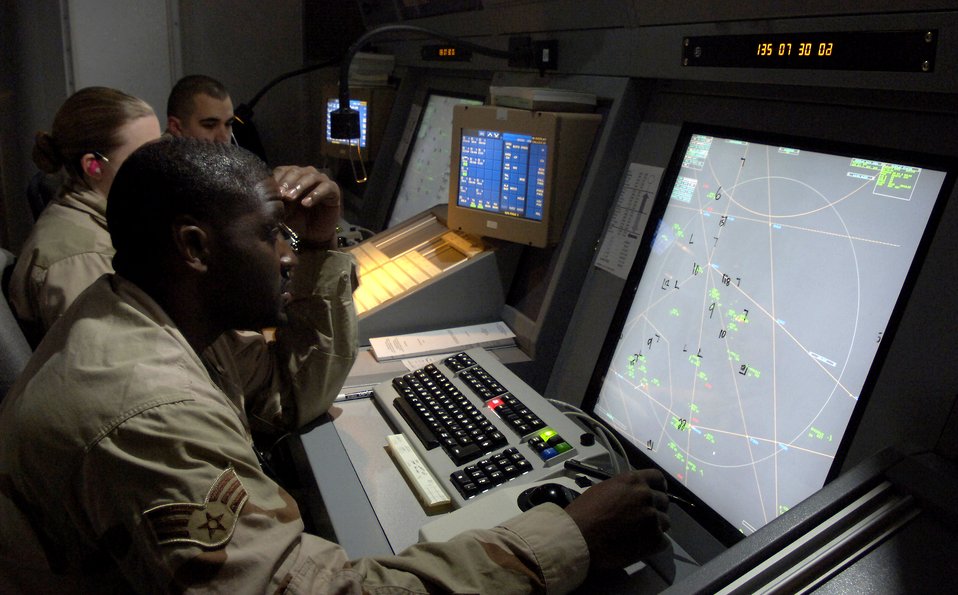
Balad remains one busy airfield

Senior Airman Sorie Bangura monitors more than 200,000 square miles of air space from the transportable radio approach control facility at Balad Air Base, Iraq, on May 15, 2006. The airfield is the busiest single-runway airfield in the Department of Defense. Airman Bangura is an air traffic controller with the 332nd Expeditionary Operation Support Squadron and is deployed here from Vance Air Force Base, Okla.